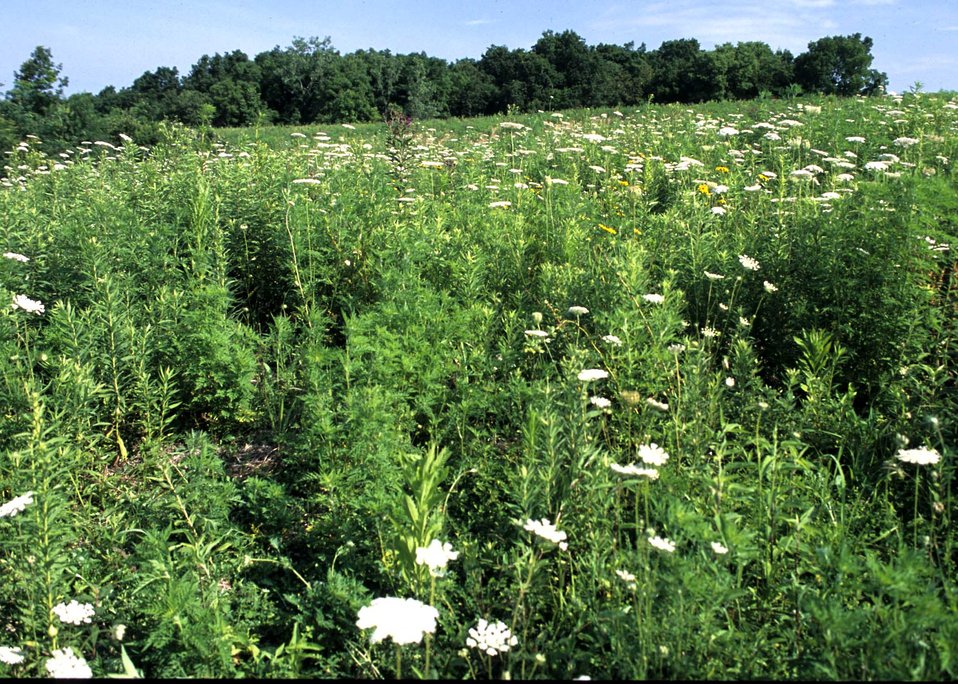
A disturbed crop field (disced) in southeast Iowa offers new growth of plants not too thick for young quail chicks to run through to escape predators.